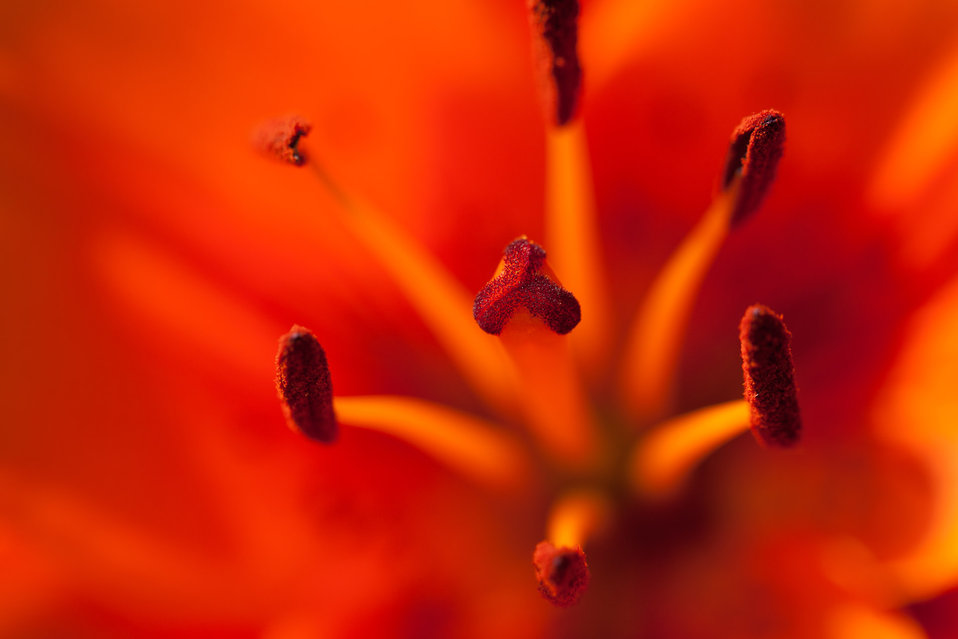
Macro lily

Macro photo of a red lily flower.